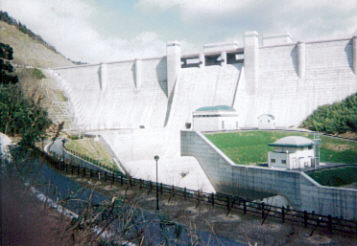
Dam